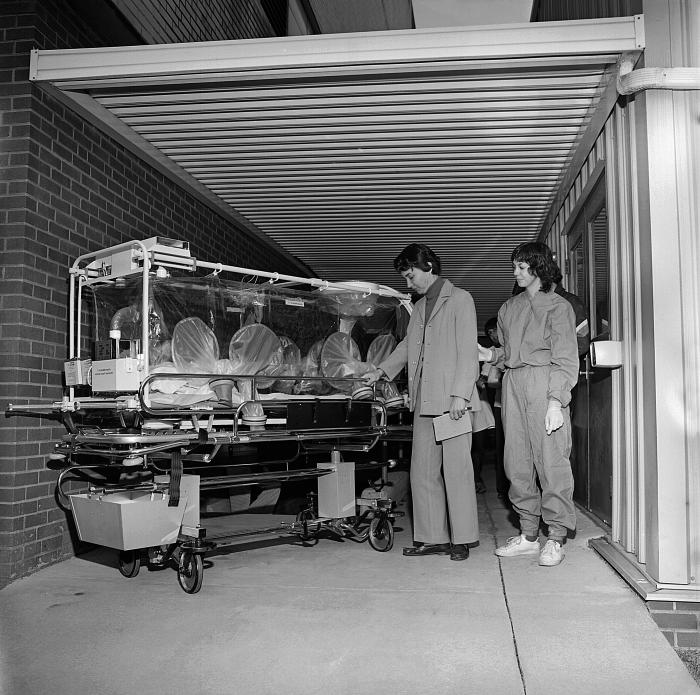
This 1981 image depicts a virtual 'patient', who was actually a healthy participant in a practice activity, walking as if she were ill, and who was about to be enclosed in a Vicker's patient-isolation unit, which would normally be used to transport critically-ill patients to nearby medical centers. Note the assistance that the patient was receiving from another participant in this activity.